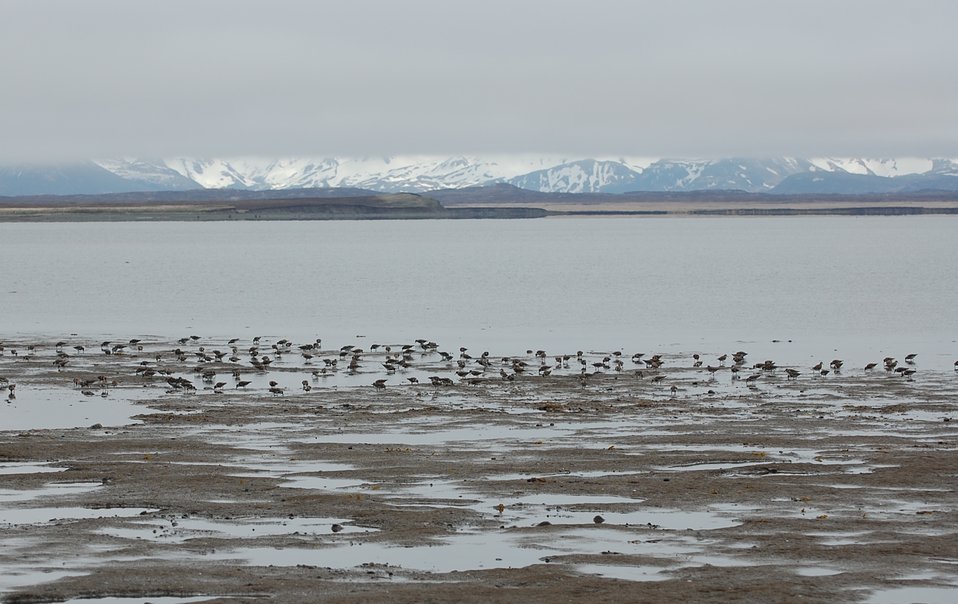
Rock Sandpiper flock

Kinzarof Lagoon, Izembek National Wildlife Refuge
Photo by Kristine Sowl,
USFWS, Public Domain